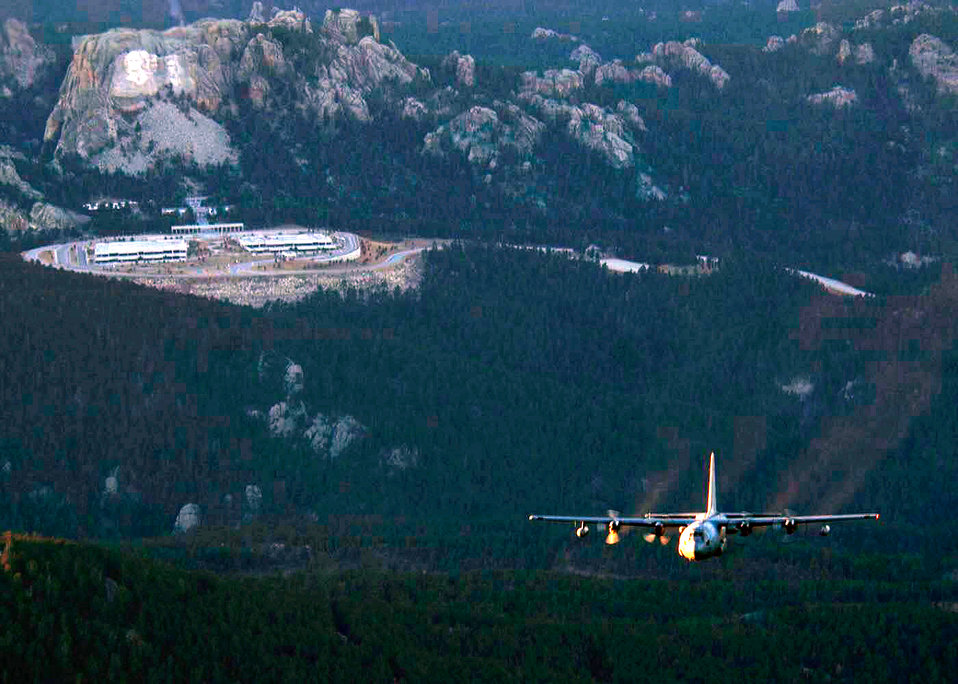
Compass call

OVER SOUTH DAKOTA (AFPN) -- An EC-130H Compass Call aircraft flies past Mt. Rushmore during a training mission. The aircraft is from the 55th Electronic Combat Group at Davis-Monthan Air Force Base, Ariz.